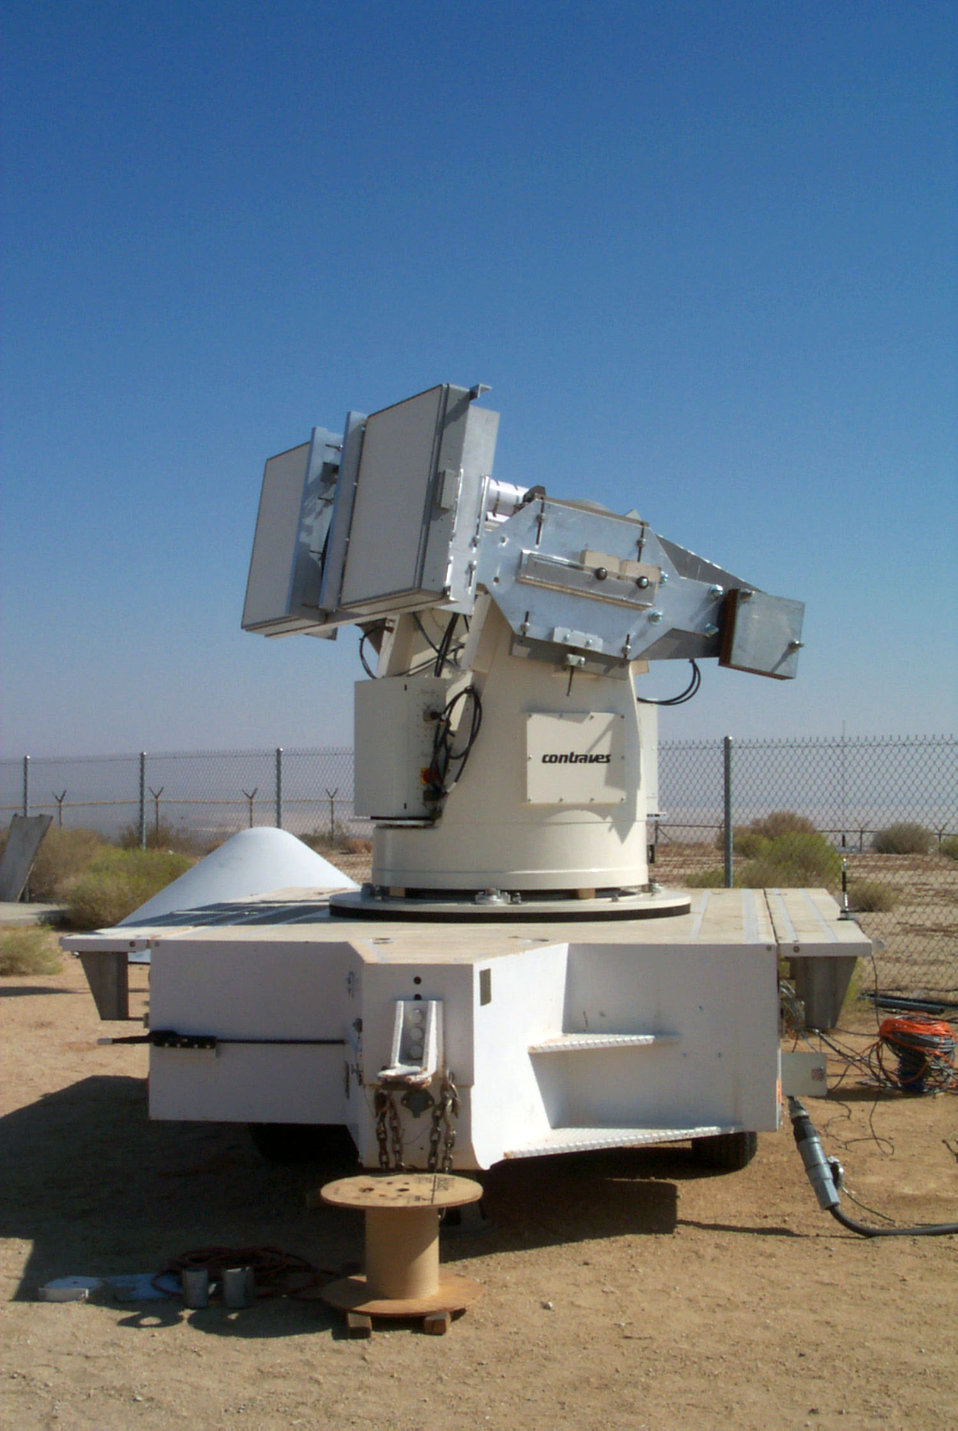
Edwards system monitors SpaceShipOne during flights

EDWARDS AIR FORCE BASE, Calif. -- The spaceport arrival and departure safety system points skyward for two technology demonstrations during SpaceShipOne flights Sept. 29 and Oct. 4. The system can track multiple objects at the same time.